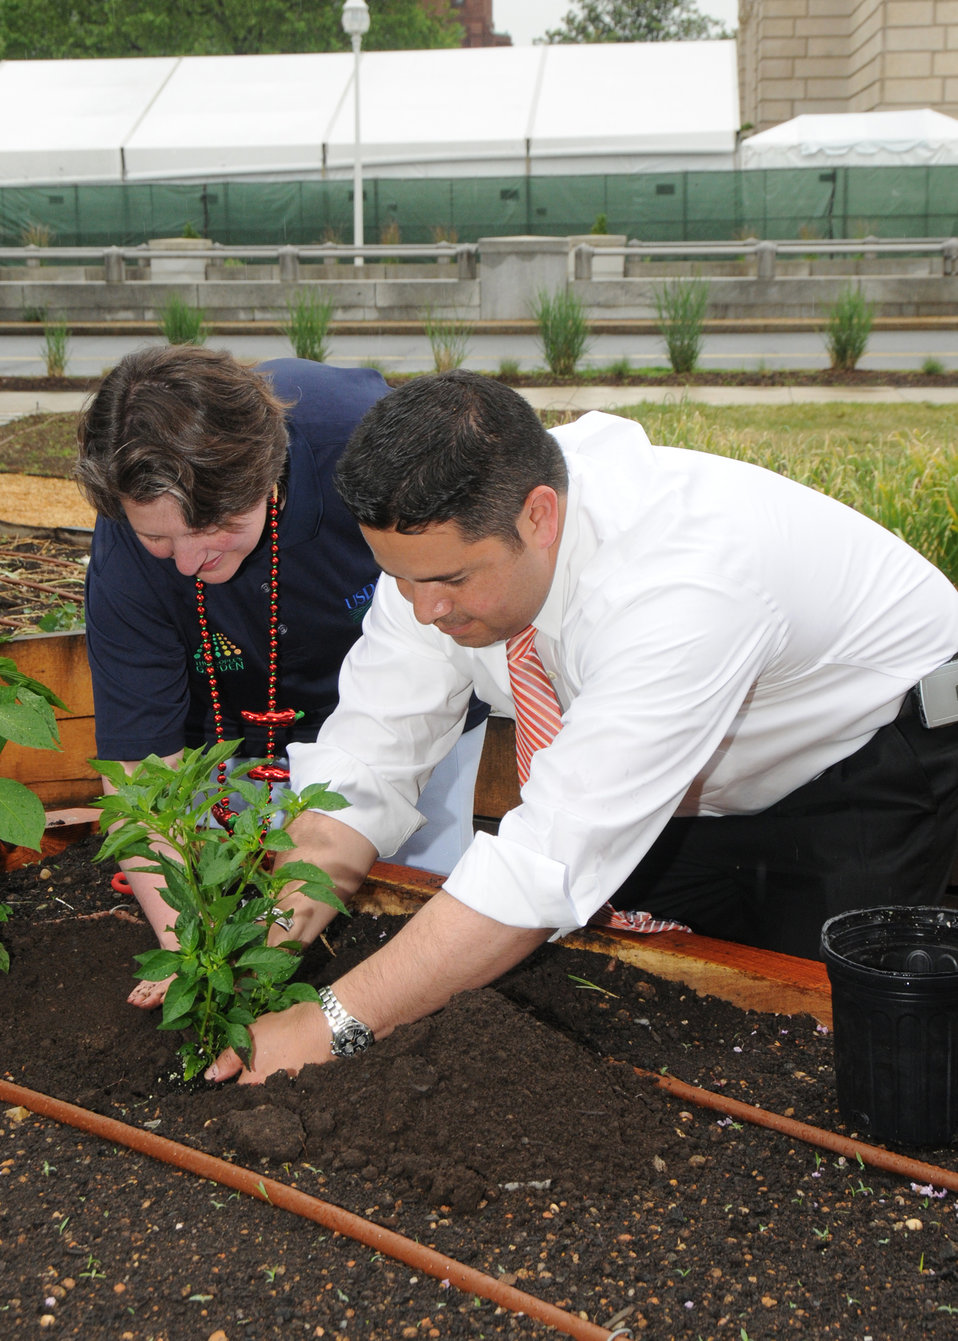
Agriculture Deputy Secretary Kathleen Merrigan assists New Mexico Congressman (3rd District) Ben Ray Luján plant chili peppers at the New Mexico Chile Pepper Fiesta held on Wednesday, June 9, 2010 on the east lawn of the Whitten Building at the USDA People’s Garden in Washington, DC. USDA photo 10di1397-121